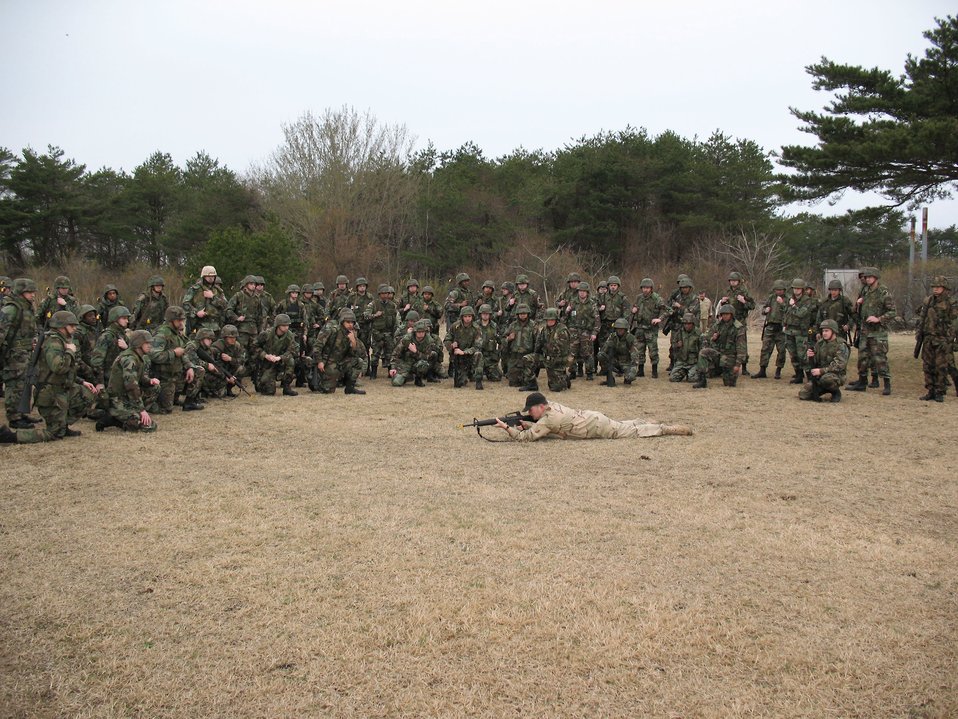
Combat skills training preps Airmen for war

Airmen learn the proper way to fire an M-16 rifle laying in the prone position during a field training exercise April 25 at Misawa Air Base, Japan. Most of these Misawa AB Airmen are deploying in the next air expeditionary force cycle, and to prepare they attended expeditionary combat skills training.